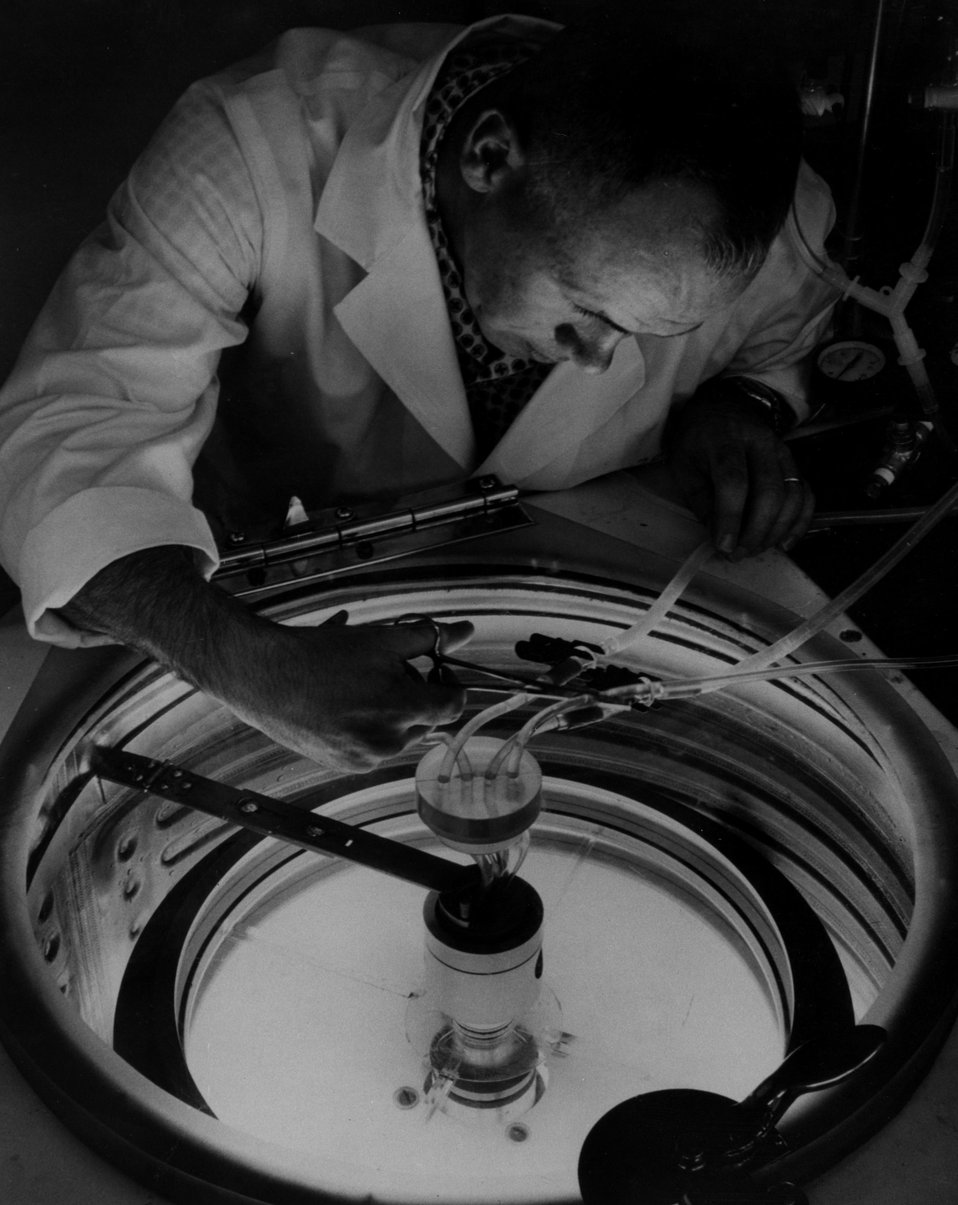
A biologist at Oak Ridge Gaseous Diffusion Plant isolates aging granules from human heart tissue in a zonal centrifuge, part of a joint AEC-NIH Bio-medical Research Program. c. 1965